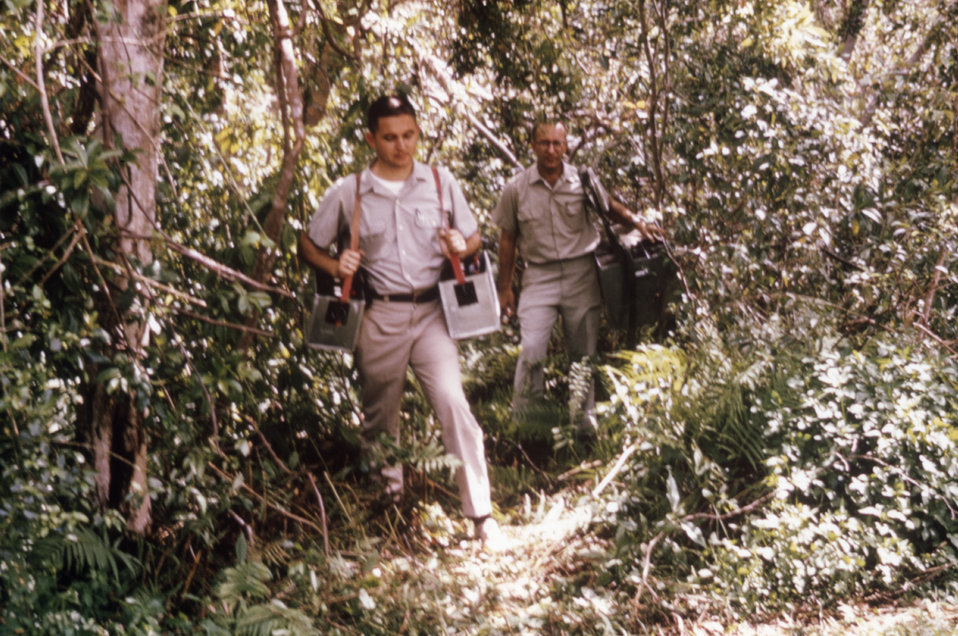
This photograph shows two CDC field researchers transporting CDC light trap equipment during an arbovirus field study.